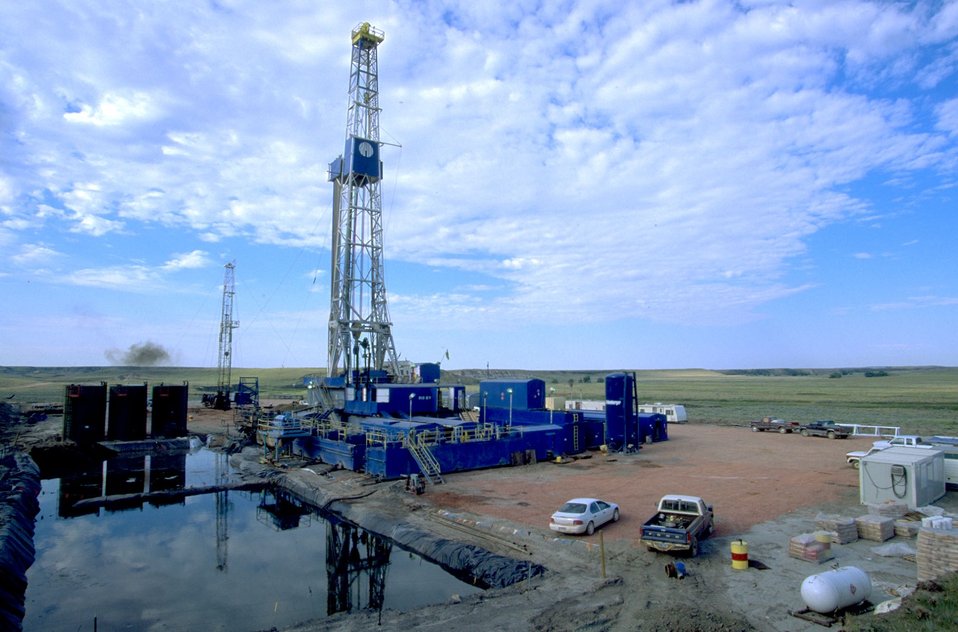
Oil drilling rig (larger blue rig), reserve pit (left of drilling rig) workover rig